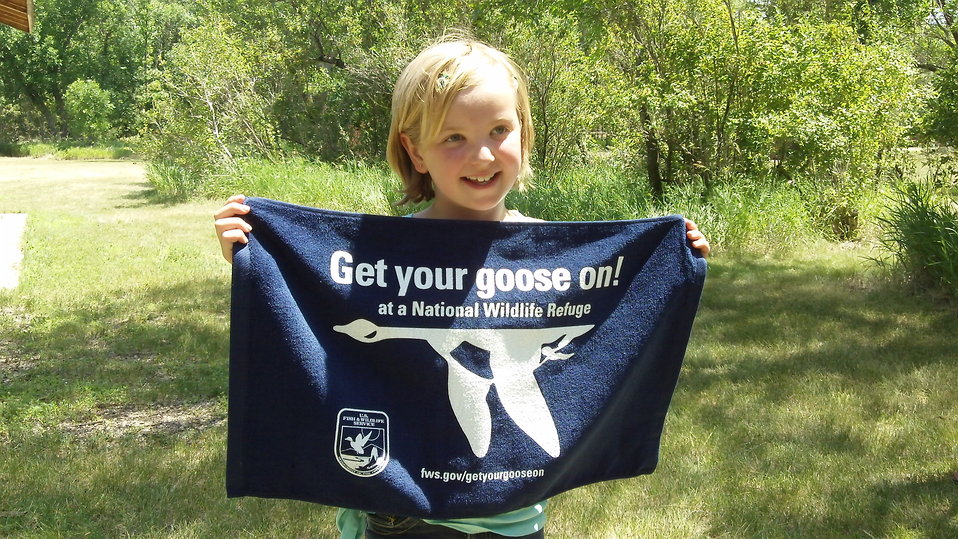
Get Your Goose On!

Photo taken at Huron Wetland Management District in east-central South Dakota.